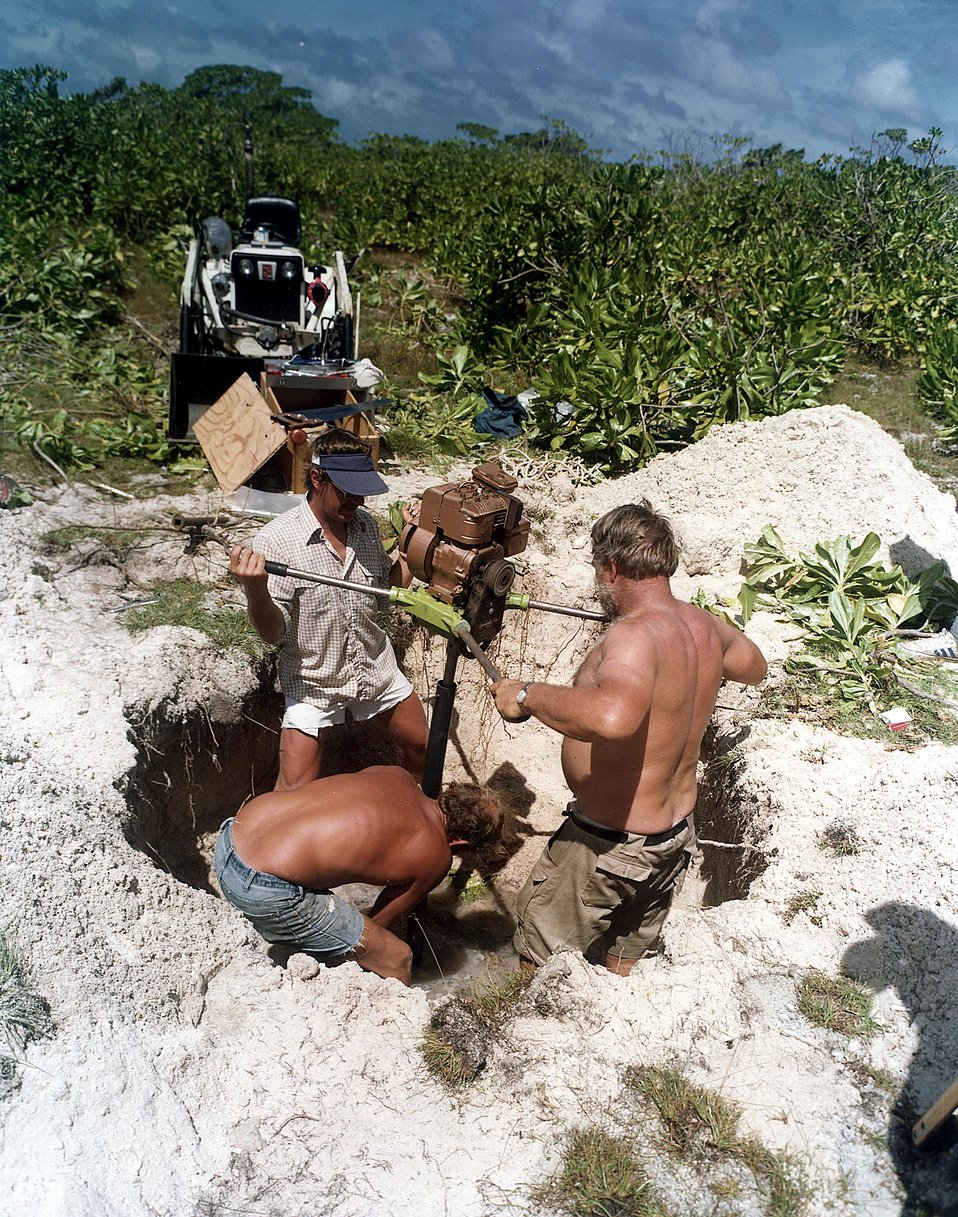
Central Control room of Quad-Cities nuclear power plant at Cordova, Illinois.